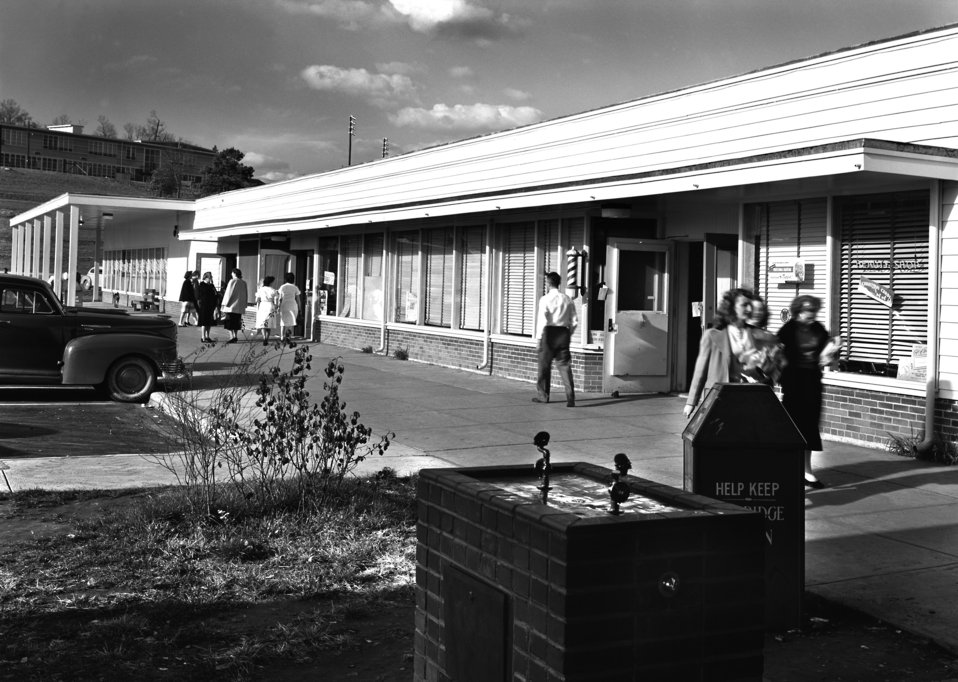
Jackson Square Shopping District Oak Ridge 1948

5299-4 DOE photo Ed Westcott 11-18-1948 Oak Ridge Tennessee